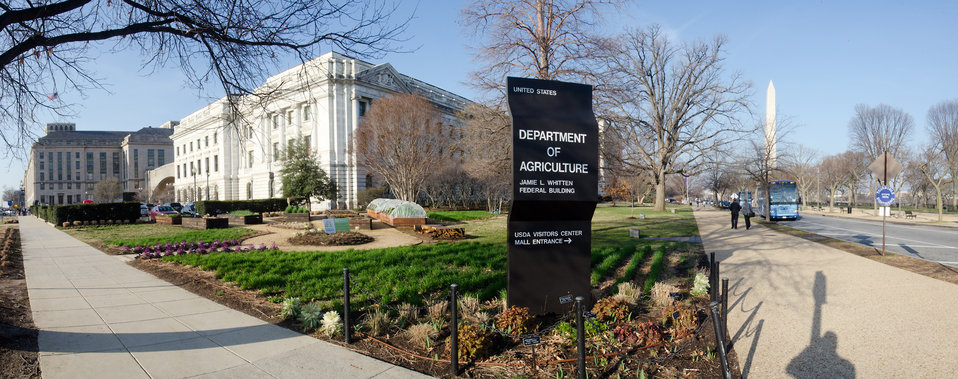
Composite panorama of the People's Garden at the U.S. Department of Agriculture (USDA), in Washington D.C., on Thursday, March 17, 2011. Volunteers pitch in several times a week, to weed, mulch, plant, water and what ever it takes to grow a wide variety of produce. Although a few are ornamental, most are destined for charity kitchens. Located on the corner of Jefferson Drive, SW and 12th St. SW, people often stop to ask questions about the garden. Part of the volunteers’ training is to be a spokesperson for the People's Garden Initiative, an effort by the USDA that challenges its employees to establish People's Gardens at USDA facilities worldwide or help communities create gardens. People's Gardens vary in size and type, but all have a common purpose - to help the community and the environment.